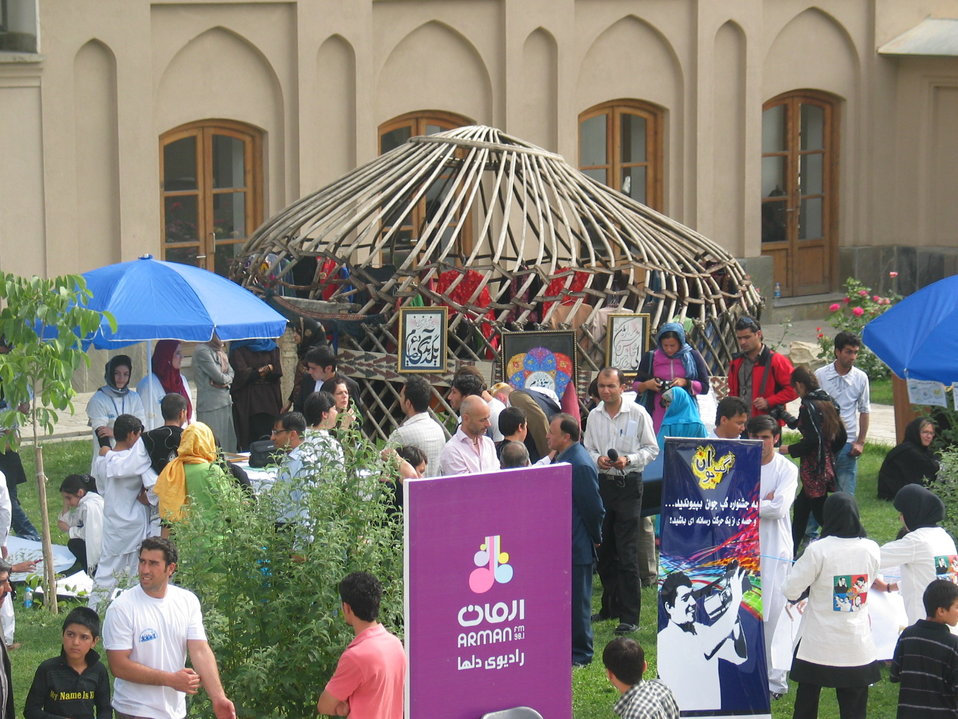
Afghan Youth Voices 009